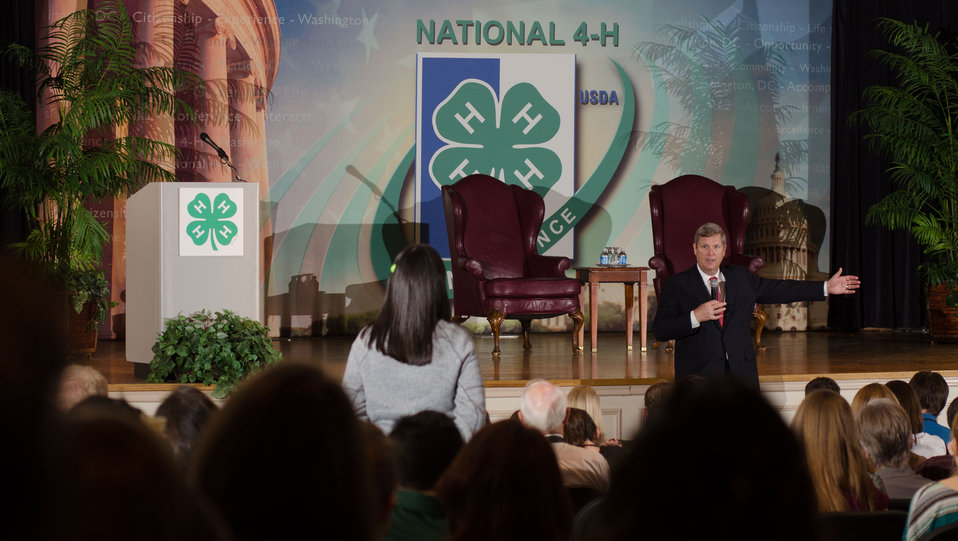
Agriculture Secretary Tom Vilsack responds a question from a 4-H member from Puerto Rico, at the National 4-H Youth Center in Chevy Chase, MD, on Monday, March 26, 2012. Questions to Secretary Vilsack, included topics such as energy, food security, People's Gardens, regulation, and labor, to name a few. 'For almost 100 years, USDA and 4-H have partnered to produce some of our nation's best and brightest, including farmers and ranchers who have supported the American economy and put food on our tables,' Vilsack said. 'You all are tomorrow's leaders. We need you to think big, innovate and help tackle the important challenges standing between us, a stronger middle class and a stronger nation.'